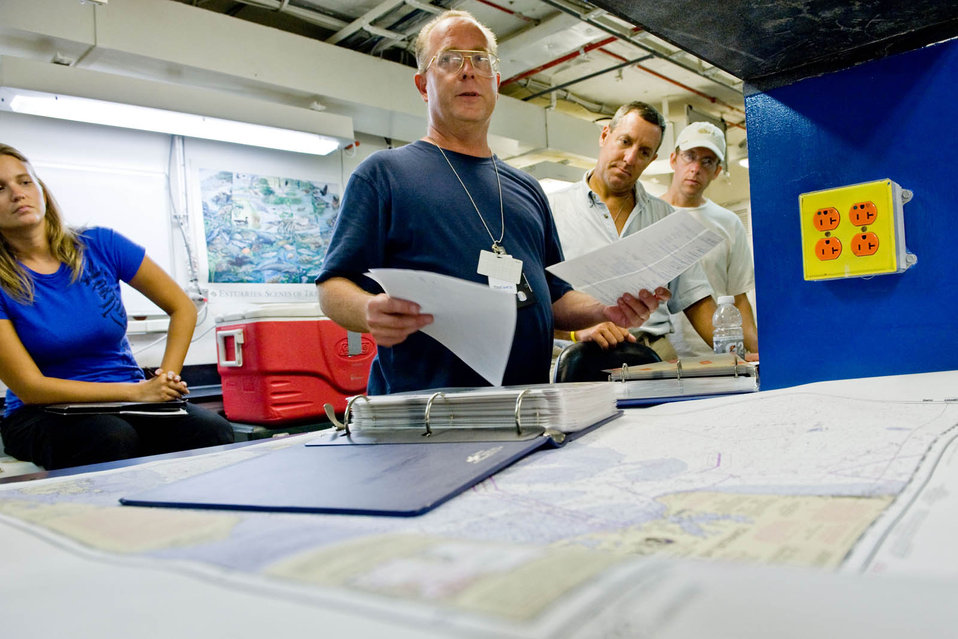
Sampling protocol

Roger Stewart, Chief Scientist, Virginia Department of Environmental Quality, reviews sampling protocol with crew members.